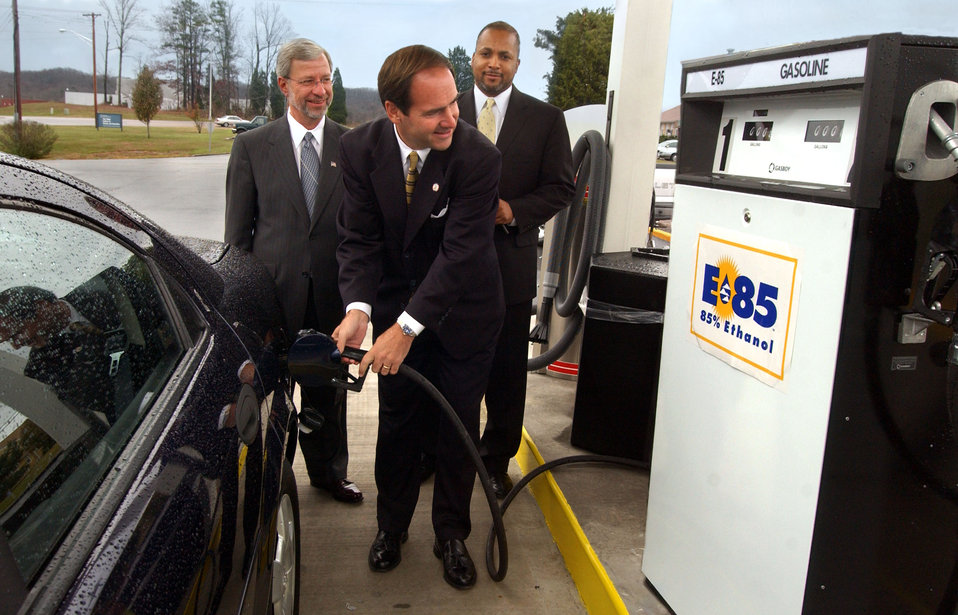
E-85 Fuel Opening at Federal Building

03-349-38 DOE photo by Lynn Freeny

Gerald Boyd Manager ORO,Congressman Zach Wamp and Mark Deathridge Pres. ETMC Oak Ridge Tennessee Nov. 24, 2003